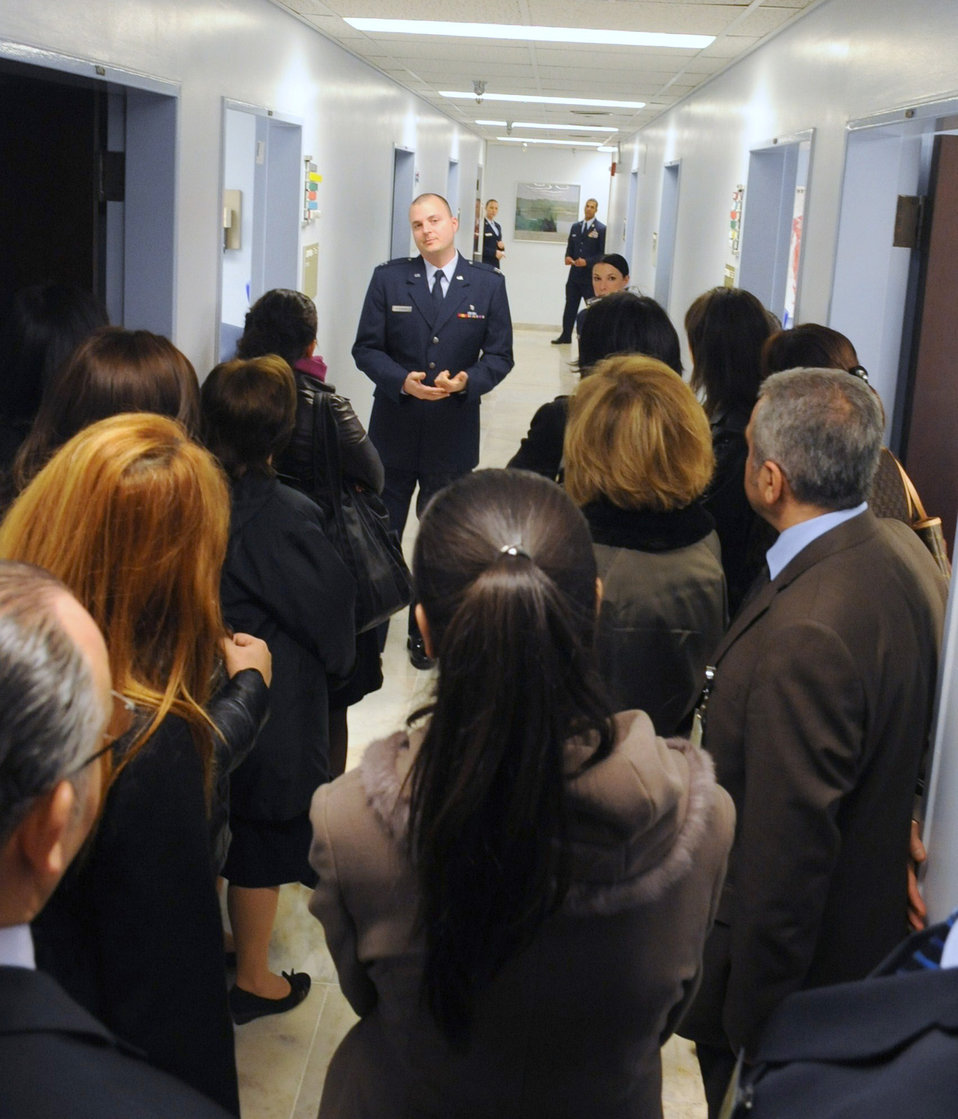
Incirlik Airmen strengthen partnership

Capt. John Kitsteiner briefs providers from Acibadem and Metropark, two hospitals in Turkey, on family health procedures during the 39th Medical Group open house March 10, 2011, at Incirlik Air Base, Turkey. Captain Kitsteiner is a family practice physician assigned to the 39th MDG.